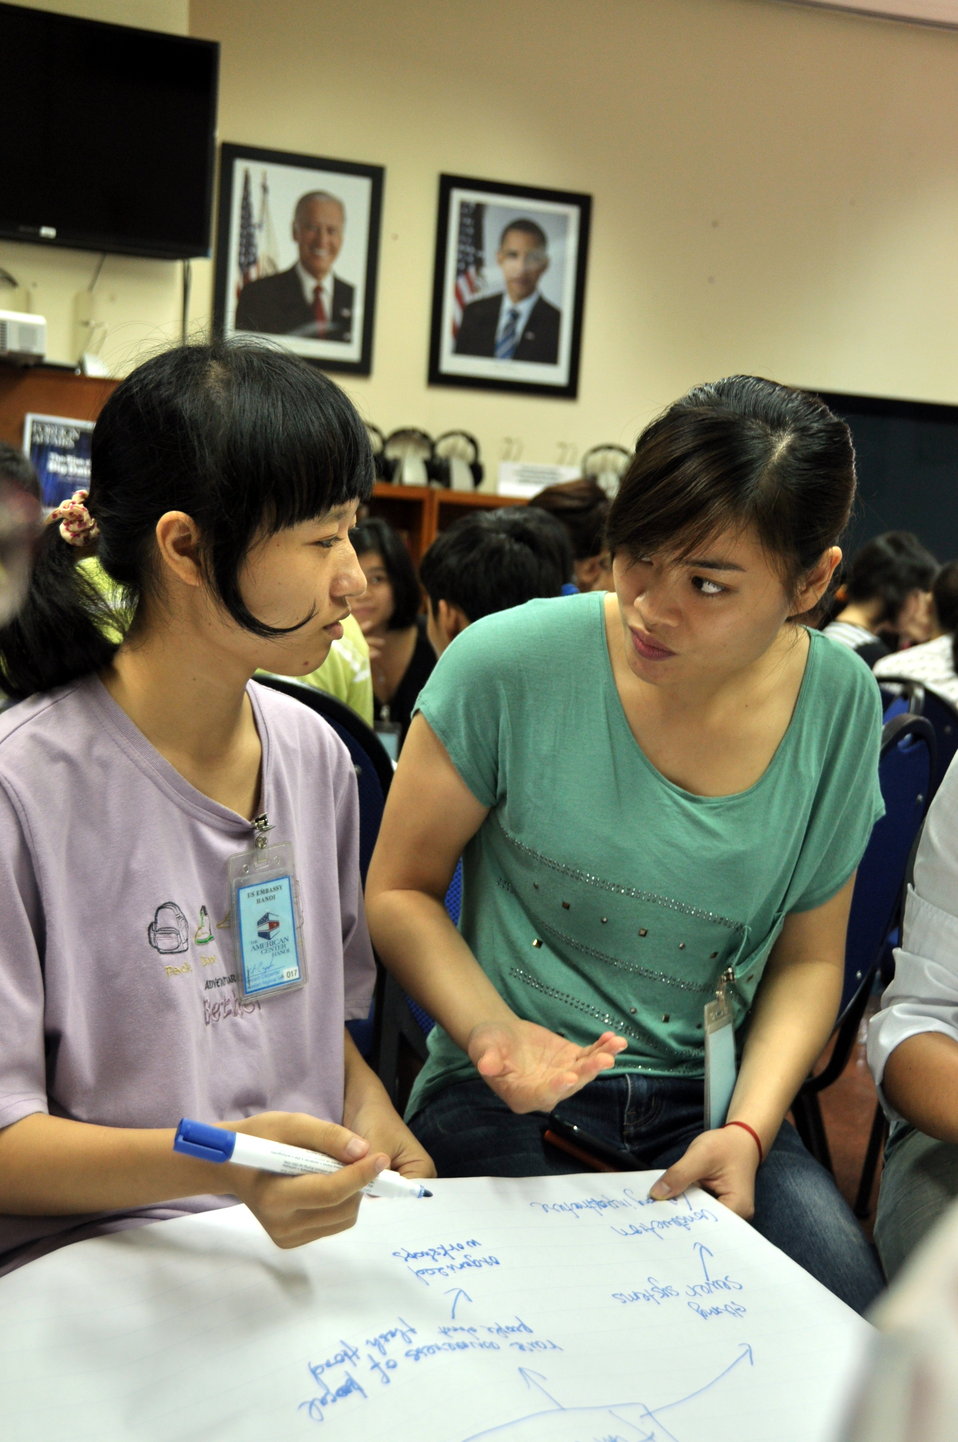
Climate Change Talk at the American Center

Hanoi, May 28, 2013.